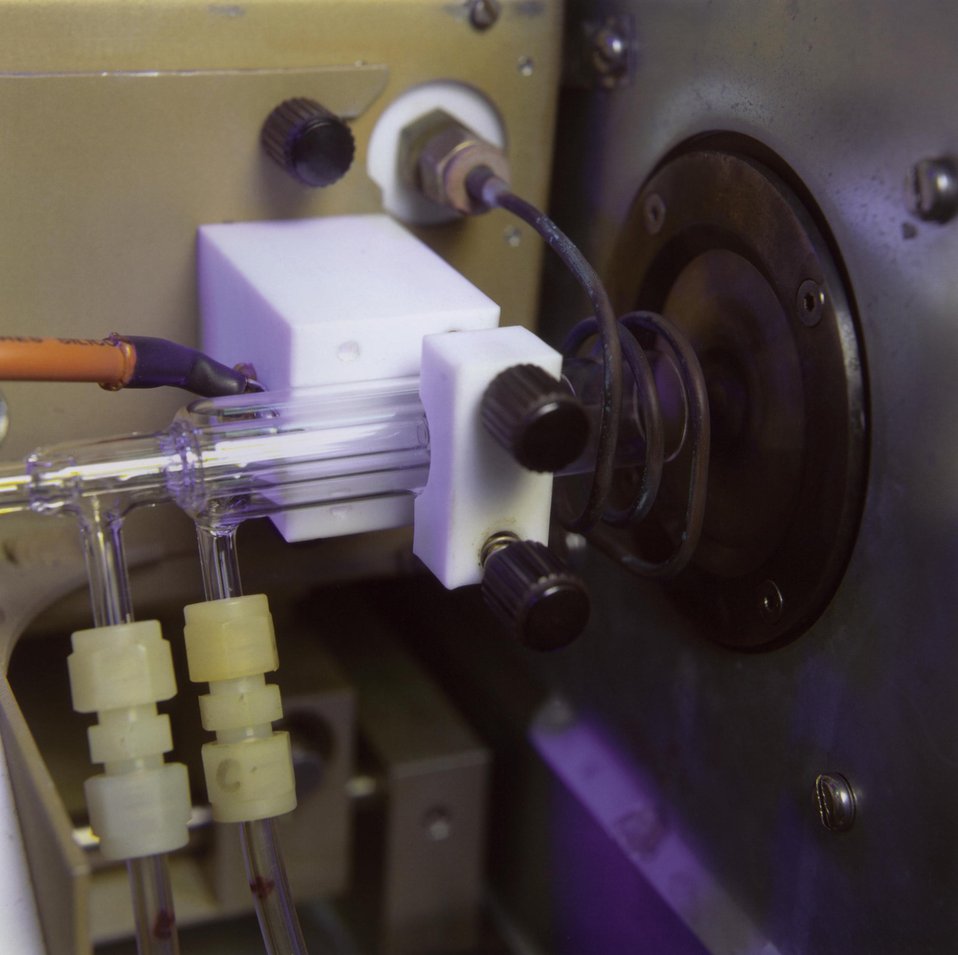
OPEN VIEW OF INDUCTIVELY COUPLED PLASMA CHAMBER.
AMES SCIENTISTS DEVELOPED AN INNOVATIVE TECHNIQUE THAT COMBINES INDUCTIVELY COUPLED PLASMA-MASS SPECTROMETRY WITH CHROMATOGRAPHY TO IDENTIFY ULTRATRACE METALS IN BIOLOGICAL SYSTEMS AT PARTS PER TRILLION LEVELS. ALLOWING MEASUREMENTS AT PARTS PER TRILLION LEVELS, THE ICP-MS TECHNIQUE RELIES ON A SPECIAL TYPE OF CHROMATOGRAPHIC SEPARATION CALLED SIZE EXCLUSION CHROMATOGRAPHY IN CONNECTION WITH A STATE OF THE ART MAGNETIC SECTOR MASS SPECTROMETER AND AN INDUCTIVELY COUPLED PLASMA, A VERY HOT ARGON GAS.